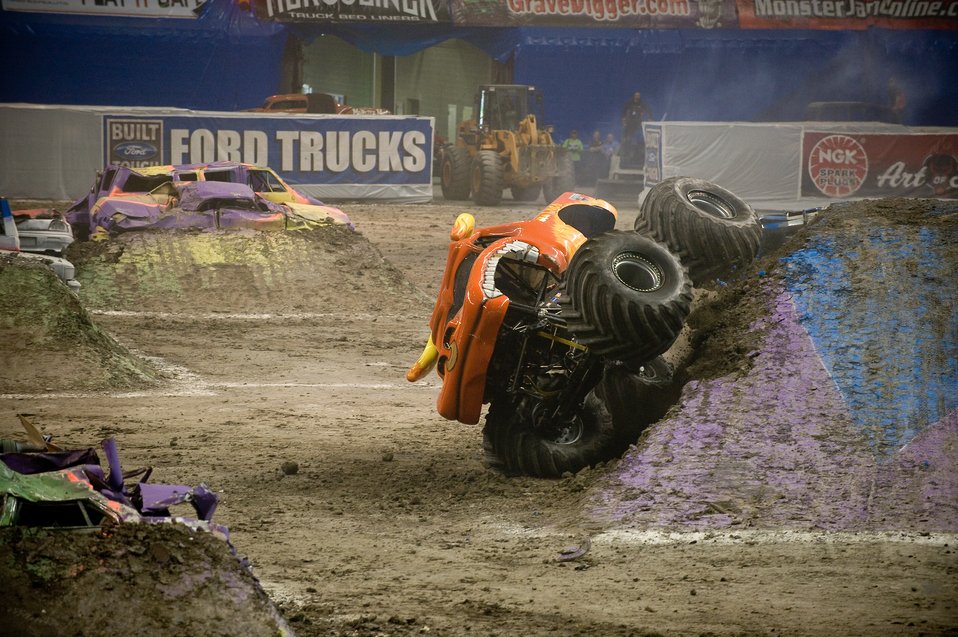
AF flies high at Monster Jam

Lupe Soza, driving El Toro Loco, gave the best freestyle performance with a perfect score to win the event at the 2009 Monster Jam at the Alamodome in San Antonio on Jan 11. Mr. Soza drove his truck to the limit with multiple two-wheeled saves as he jumped off, bounced on and drove over the obstacles made of dirt mounds, busses and crushed cars. Approximately 45,000 people attend the event. These monster trucks have big block supercharged racing V-8 engines that churn out more than 1,400 horsepower. They weigh approximately 10,000 lbs and are equipped with four-wheel steering. The wheels and tires are 66